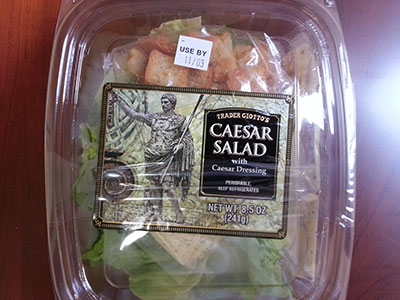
RECALLED -Trader Giotto’s Caesar Salad

November 3, 2013 – Product Recall – Ghiringhelli Specialty Foods Issues Voluntary Alert on Undeclared Allergens in Caesar Salad.